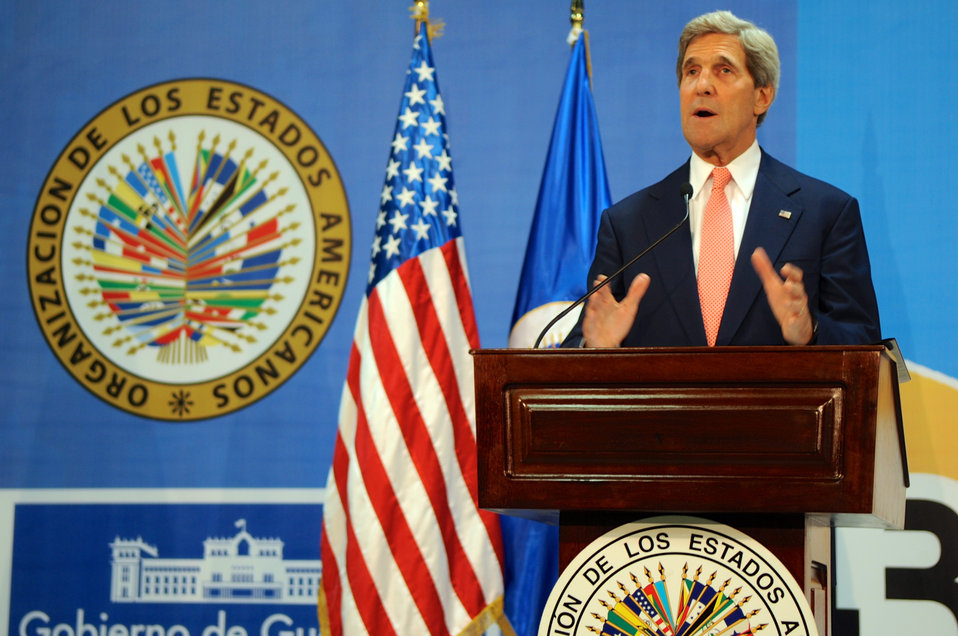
Secretary Kerry Holds a News Conference

U.S. Secretary of State John Kerry holds a news conference addressing regional issues amid an Organization of American States ministerial meeting in Antigua, Guatemala, on June 5, 2013.